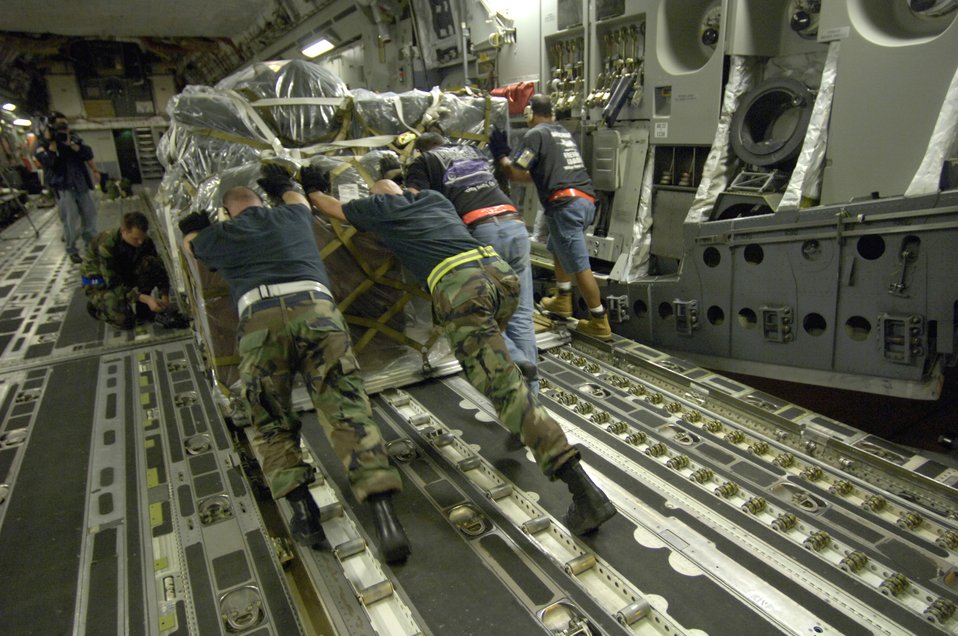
Philippine relief

HICKAM AIR FORCE BASE, Hawaii (AFPN) -- Members from the 735th Air Mobility Squadron push a cargo pallet on to a C-17 Globemaster III to support relief efforts in the Philippines. The composite C-17 squadron of active duty and Hawaii Air National Guard loaded the pallets Feb. 21 to carry military rations, water, cots, tents and personnel from the 15th Airlift Wing to help out with the mudslide disaster.